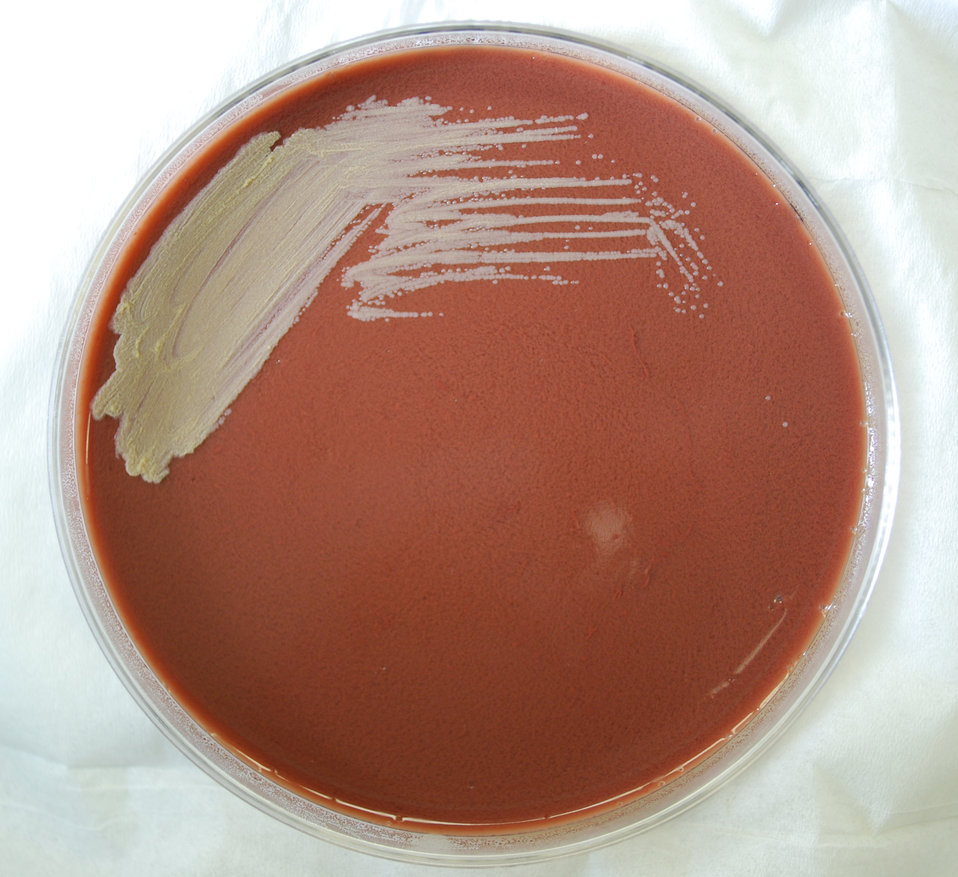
This photograph depicts the colonial morphology displayed by Gram-negative Francisella tularensis bacteria, which is the pathogen responsible for causing the disease tularemia. These bacteria were grown on a medium of cysteine heart infusion agar (CHAB), for a 48 hour time period, at a temperature of 37�C. For a closer look at these colonies, see PHIL 12217.